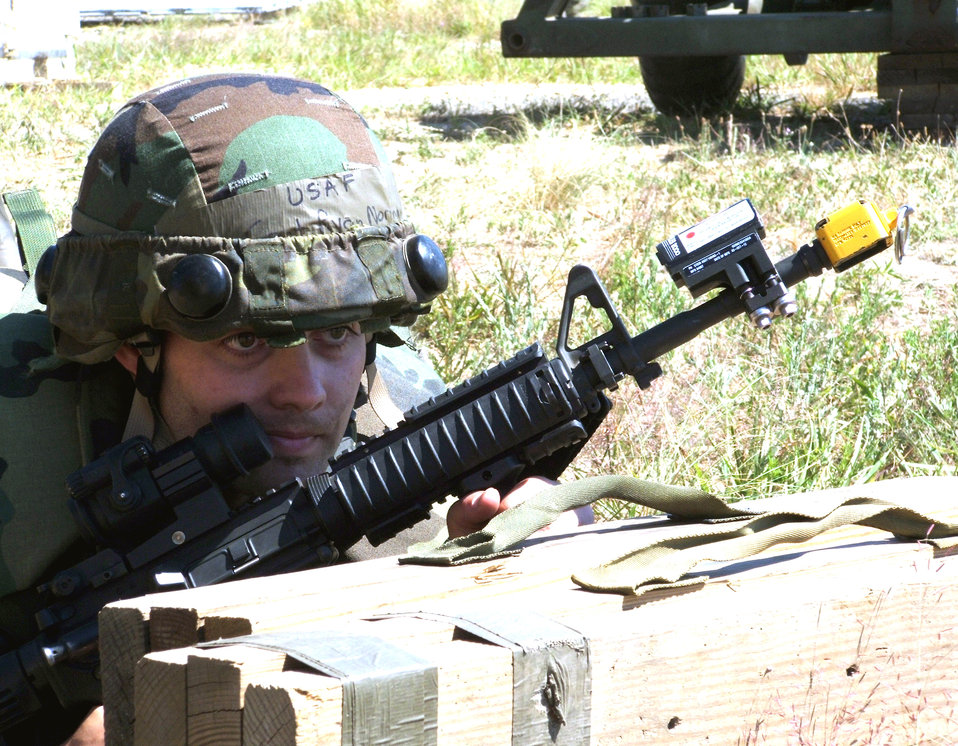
Deployment skills

Capt. Ryan Norman takes cover during an Eagle Flag 06-4 scenario at Naval Air Engineering Station Lakehurst, N.J., on Aug. 12. The events, controlled by the Air Mobility Warfare Center's 421st Combat Training Squadron, test Airmen on their expeditionary combat support skills in preparation for deployments. Captain Norman is stationed at Travis Air Force Base, Calif.